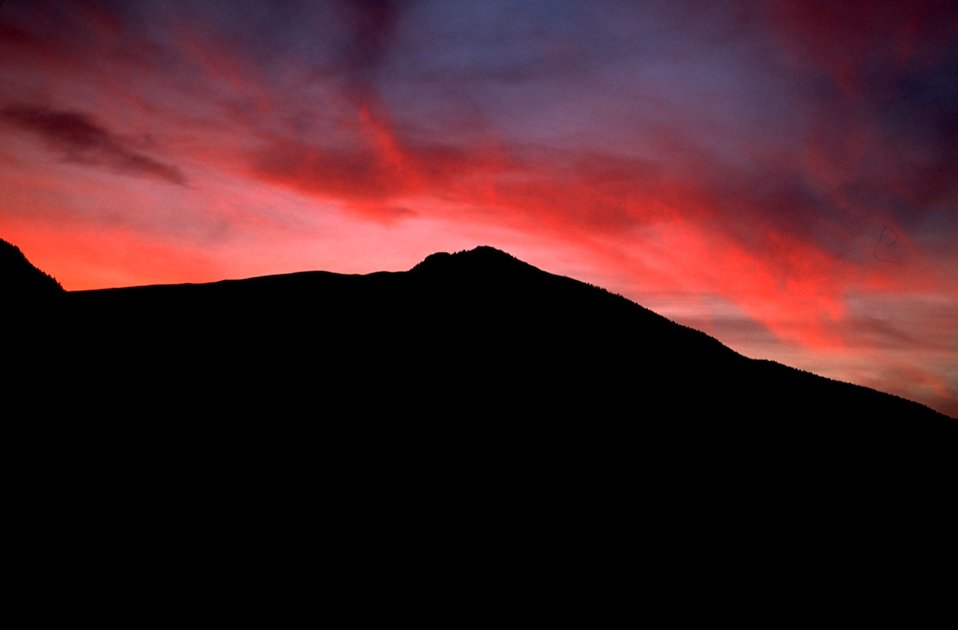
Sunset with mountains in silhouette